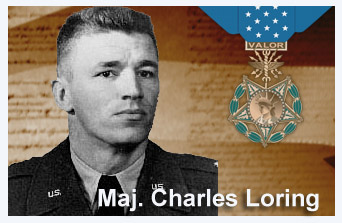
Maj. Charles Loring

On Nov. 22, 1952, while leading a flight of four F-80 Shooting Stars against enemy gun positions in Korea, Maj. Charles J. Loring was hit repeatedly by ground fire during his dive. Instead of withdrawing, Major Loring aimed his F-80 directly at the gun positions and crashed into them, destroying them upon impact. Major Loring received the Medal of Honor for his sacrifice.